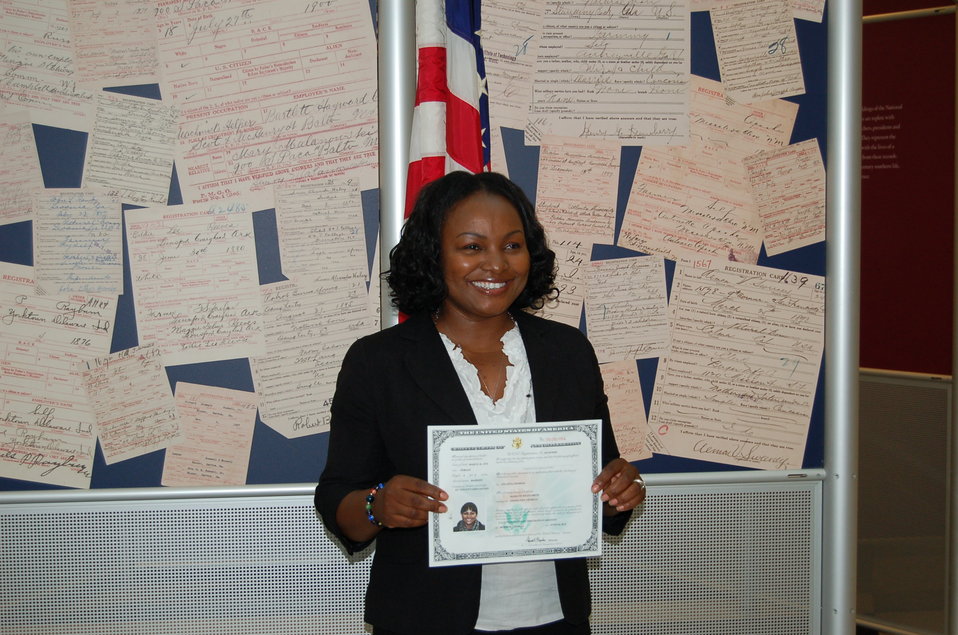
New Citizens